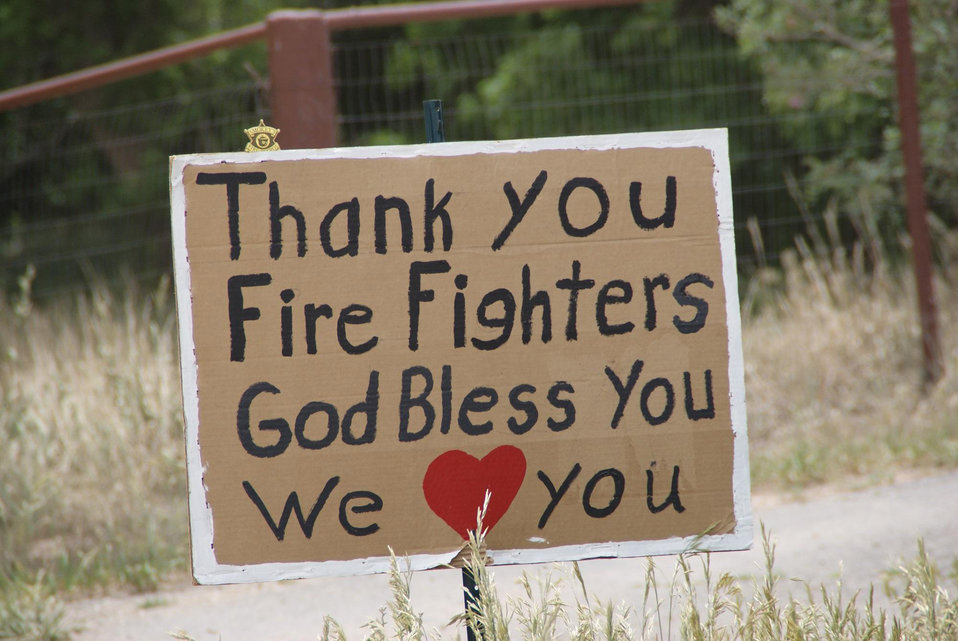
A sign sits near a home in the Walsenburg, CO area thanking firefighters for their hard work in protecting homeowner's property. The East Peak Fire located approximately 10 miles southwest of Walsenburg, CO began on Jun. 19, 2013 by lightning has consumed approximately 12, 996 acres. As of Jun. 28, 2013 the fire is 85% contained with 13, 521 acres burned. Due to the steep terrain, very heavy timber and continued dry conditions, there is still a potential for spot fires and thus, the fire will not reach 100 percent containment until sufficient interior mop up is complete.